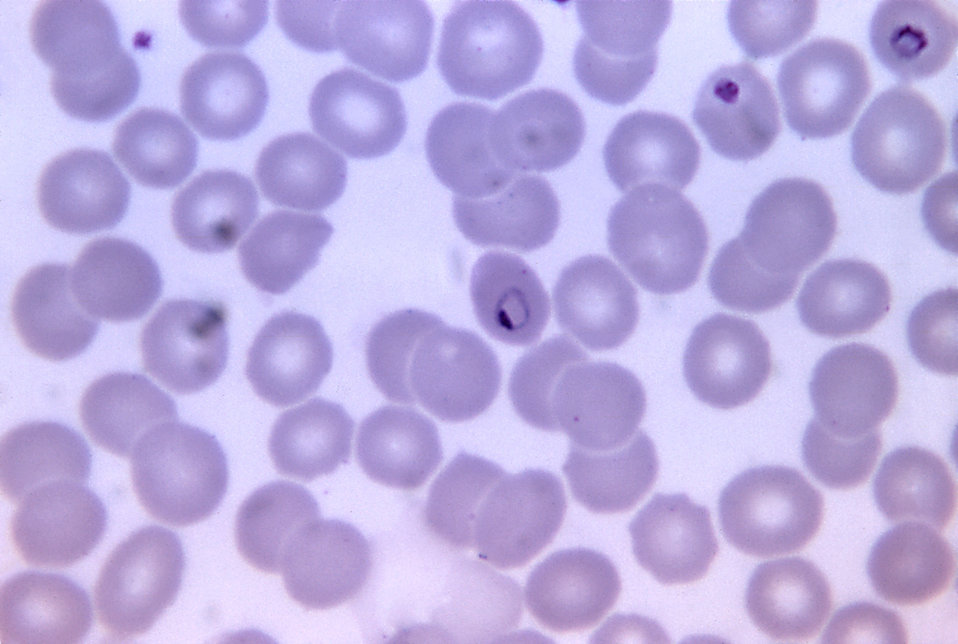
This thin film micrograph reveals Plasmodium malariae parasites using a Giemsa stain; Mag. 1125X.